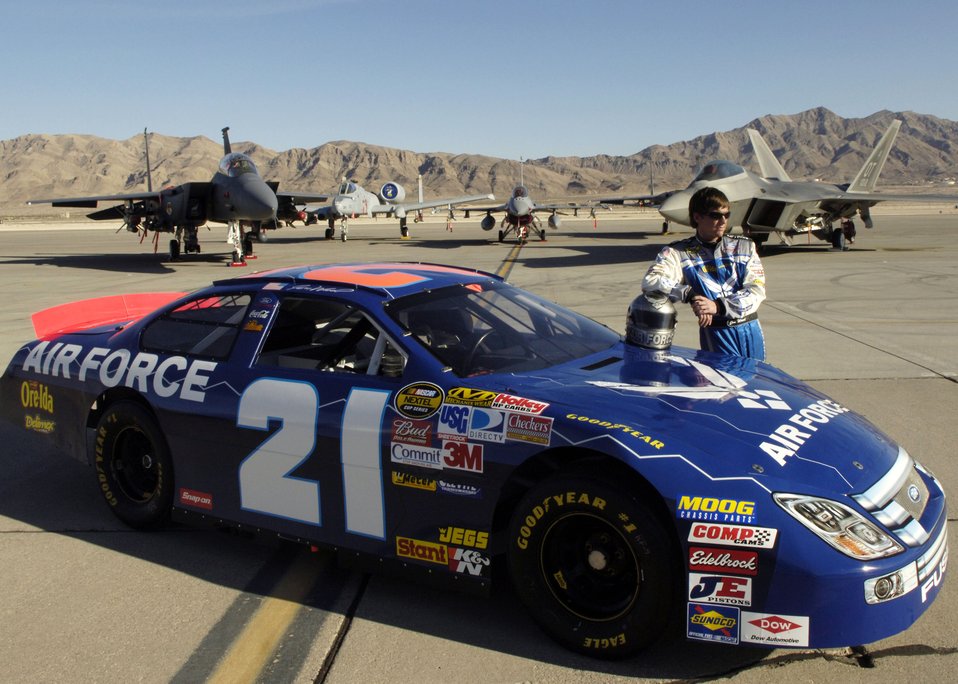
Air Force Racing

Jon Wood, driver of the Air Force car, poses for photos on the flightline at Nellis Air Force Base, Nev., March 8. Wood is at Nellis visiting Airmen before his NASCAR Nextel Cup UAW Daimler-Chrysler 400 race March 10.